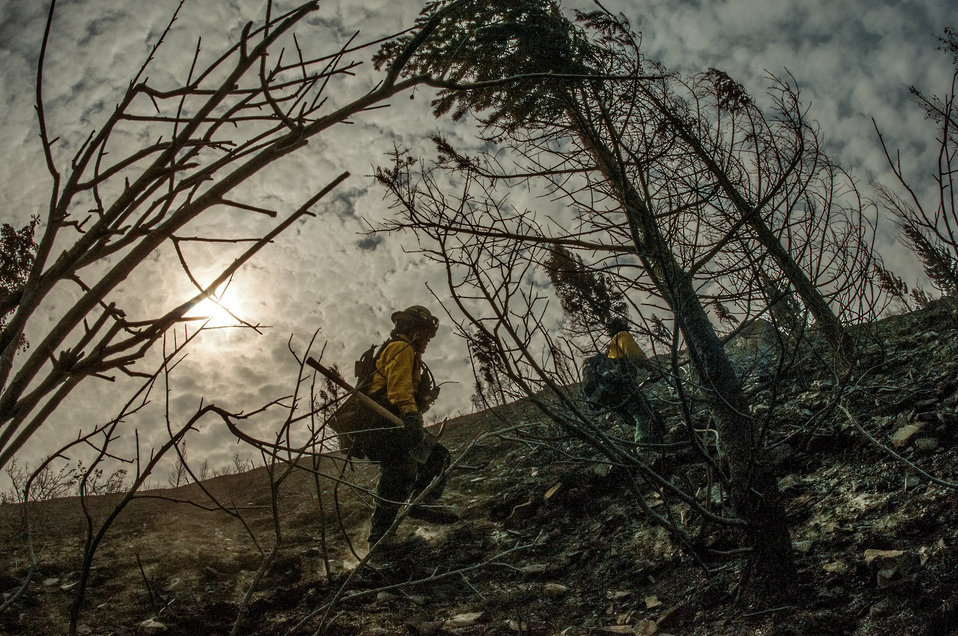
Department of the Interior, Indian Affairs (BIA) Southern Plains Initial Attack Type 2 Crew Ryan Blackstar, is a Sawyer B Faller, looking for hotspots of hot embers above or below the ground that may threaten homes at the bottom of this hill, during the Beaver Creek Fire, west of Hailey, ID, in the U.S. Department of Agriculture (USDA) Forest Service (FS) and Sawtooth National Forest and Bureau of Land Management (BLM) lands, on Wednesday, Aug 21, 2013. A sawyer is a person who runs the power saws to cut down trees. The B qualification means the person has demonstrated sufficient judgment, skill, and knowledge to be trained or certified in moderately complex chain saw operations. Certified Faller B individuals may work independently on project or fireline assignments up to their level of skill. They demonstrate the judgment to decline assignments that exceed their skill level.